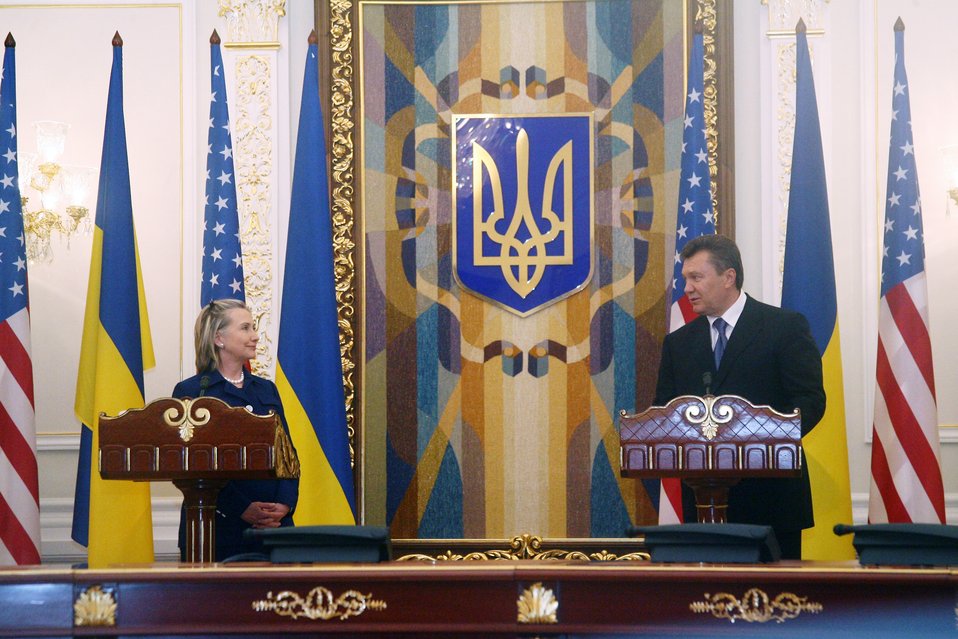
Secretary Clinton and Ukrainian President Hold Joint Press Conference

U.S. Secretary of State Hillary Rodham Clinton participates in a joint press conference with Ukrainian President Viktor Yanukovych in Kyiv, Ukraine, on July 2, 2010.